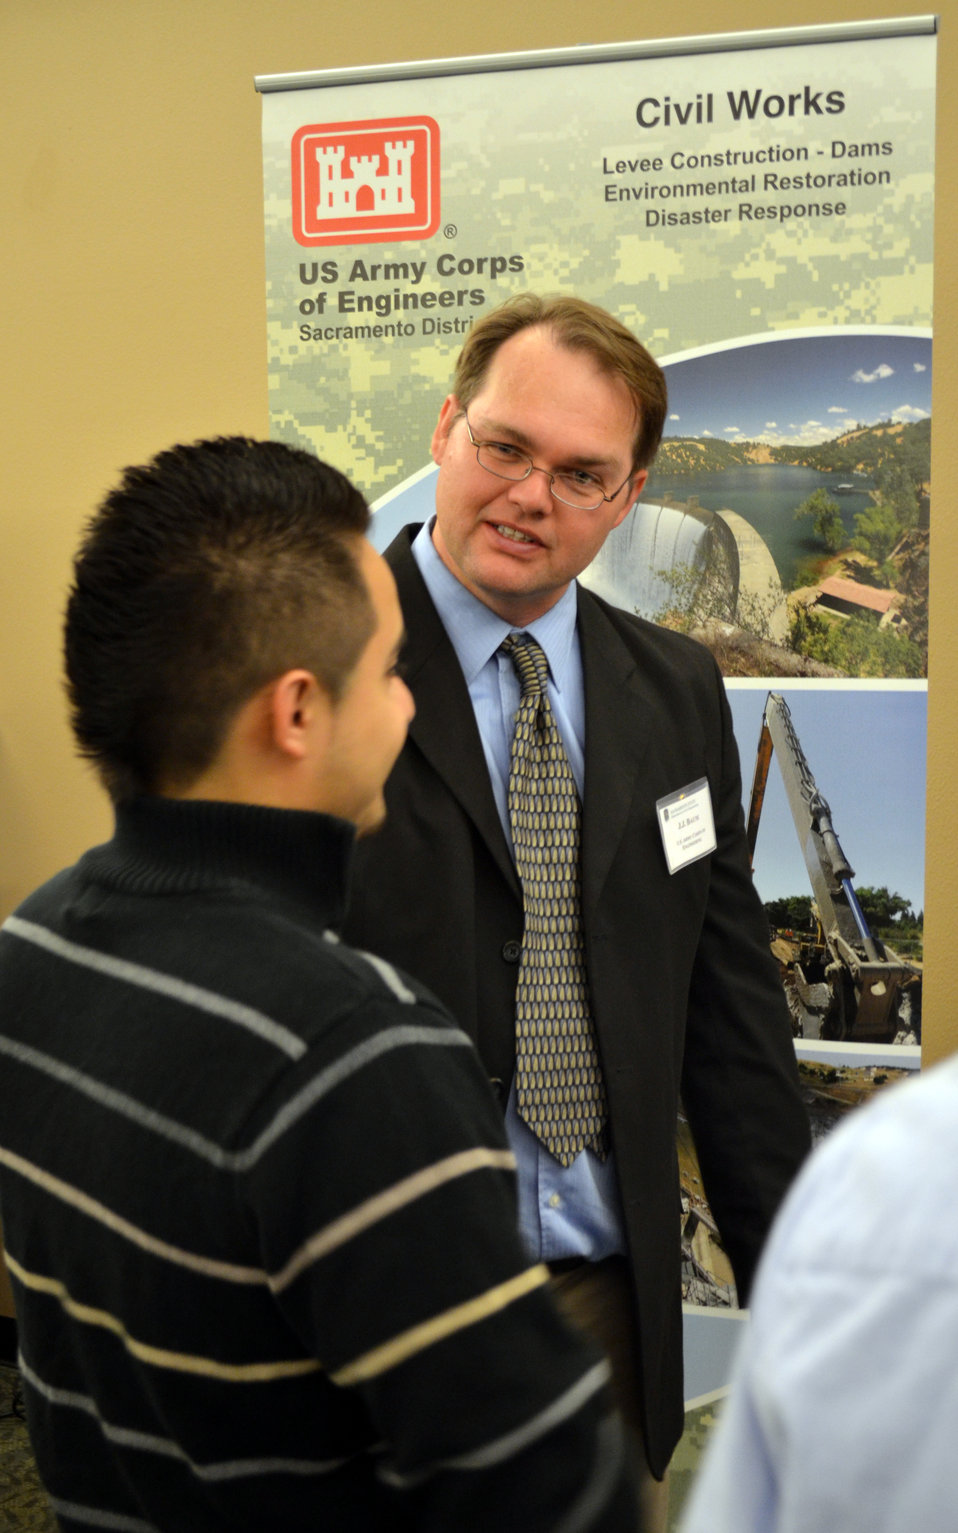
Corps engineers showcase federal jobs to students at Career Fair

Water quality specialist J.J. Baum (right), with the U.S. Army Corps of Engineers Sacramento District, speaks to a California State University-Sacramento student during a career fair in Sacramento, Calif., Nov. 3, 2011. Baum and other Corps engineers spoke to more than 40 students about intern and job opportunities with the Corps, aimed at students in engineering fields.